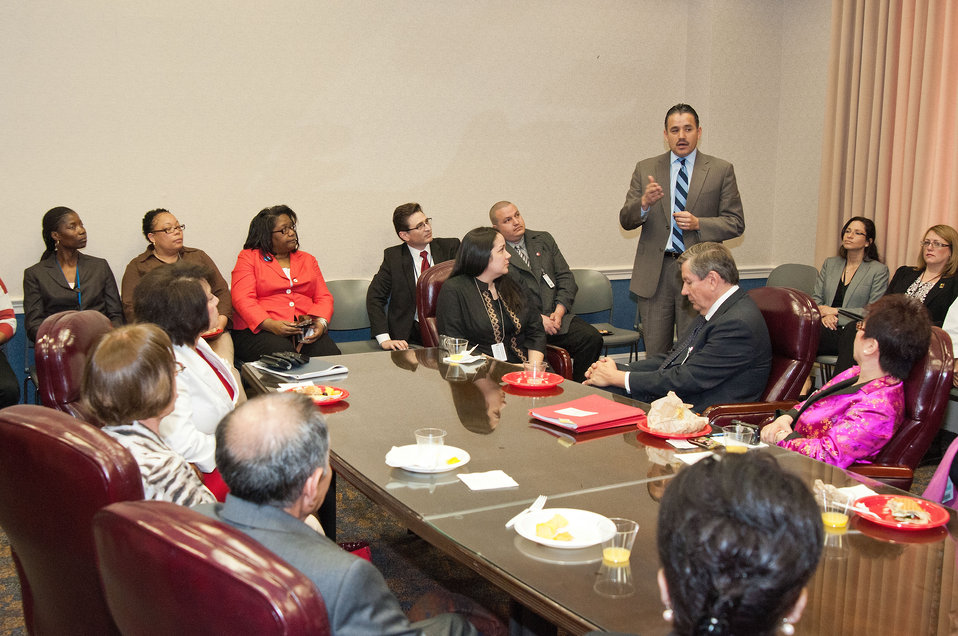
Oscar Gonzales, Deputy Assistant Secretary for Administration welcomes and assures the United States Department of Agriculture’s commitment to civil rights of farm laborers at the 2012 White House Champions of Change during a Breakfast Reception sponsored by the Office of Advocacy and Outreach and Office of the Assistant Secretary for Civil Rights at the United States Department of Department of Agriculture In Washington, D.C., on Thursday, March 29, 2012. They were being recognized for their leadership, community service and service to others prior to being honored at the White House in Honor of Cesar Chavez Day. Chavez was a Mexican-American labor leader who used non-violent methods to fight for the rights of migrant farm workers in the southwestern United States. Chavez founded the Cesar Chavez Foundation, a group that advocates for the rights of farm workers, acting to increase wages and improve the working conditions and safety of farm workers.